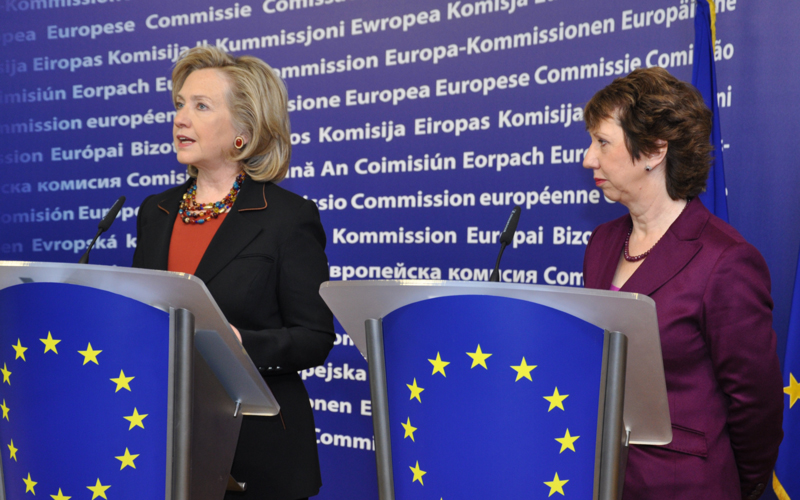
Secretary Clinton and EU High Representative Ashton Deliver a Joint Press Statement

U.S. Secretary of State Hillary Rodham Clinton and EU High Representative for Foreign Affairs and Security Policy, and Vice President of the European Commission, Catherine Ashton deliver their public statements on Pakistan to the press at the Berlaymont building in Brussels, Belgium, on October 14, 2010.